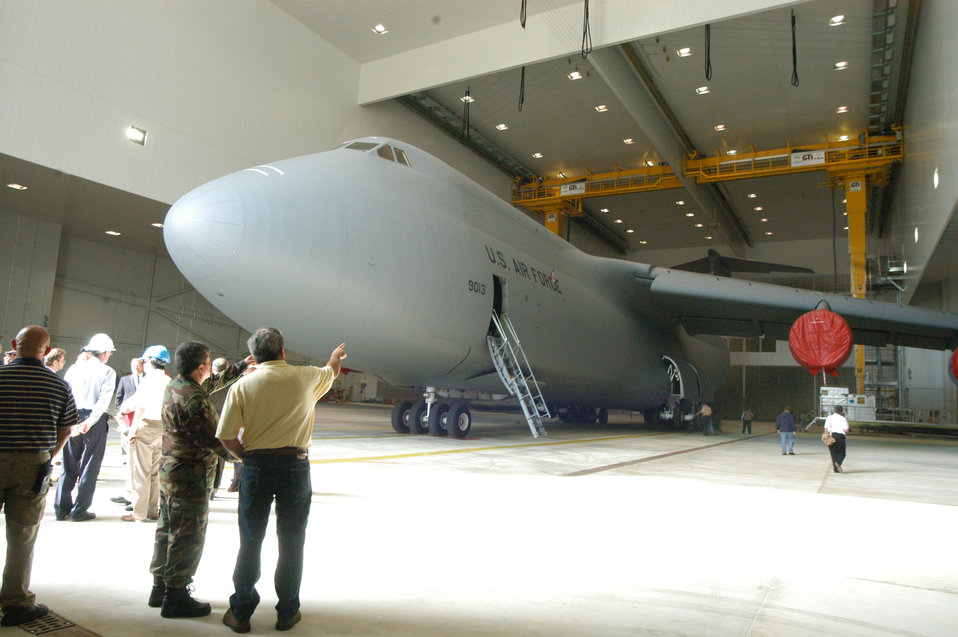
New facility paints bright future for Air Force aircraft

A C-5 Galaxy is parked in the new large aircraft corrosion control hangar May 9 at Robins Air Force Base, Ga. The new facility's 225,000 total square feet, houses two 65,000 square foot hangar bays. Each bay can hold a C-5 size plane, with 20 feet of working space around it.